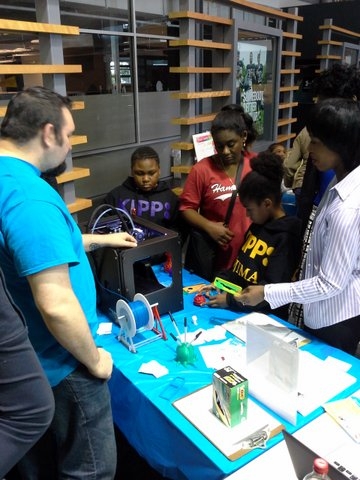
Sept 14 2013 Girls in STEM Summit

Director Dot Harris speaks to middle and high school girls in Baltimore at the Girls in STEM Summit this Sept.